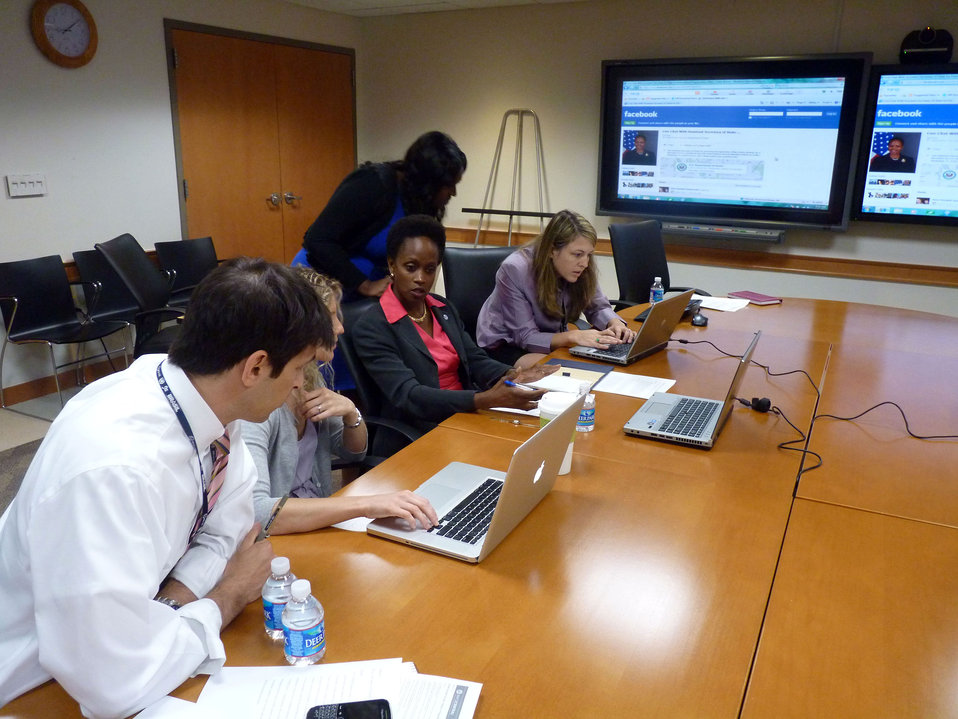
Assistant Secretary Brimmer Responds to Your Questions

Assistant Secretary of State for International Organization Affairs Esther Brimmer responds to your questions in a live Facebook chat on U.S. priorities at the 67th United Nations General Assembly (UNGA) on September 21, 2012.